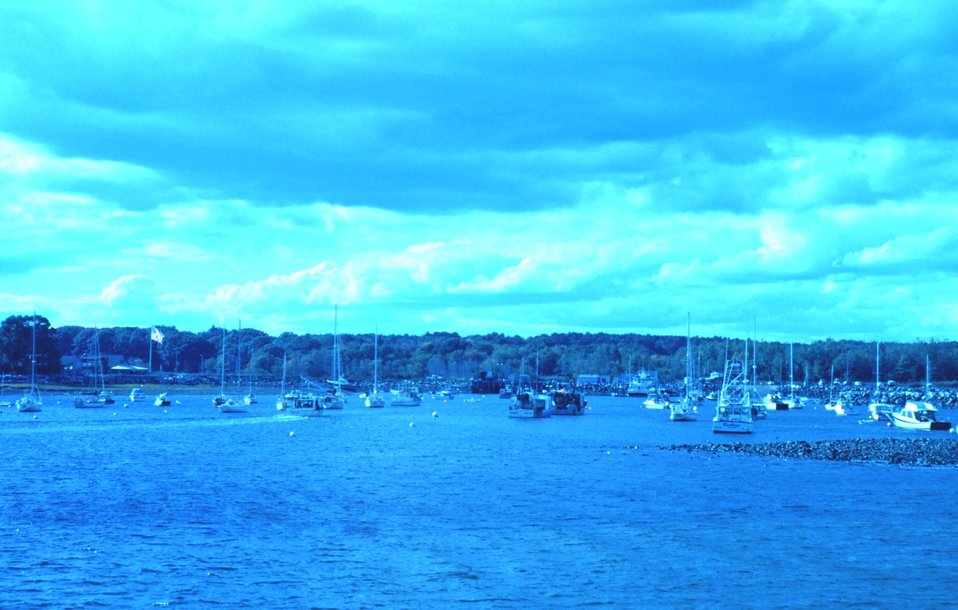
A view of the harbor at Odiorne Point State Park.